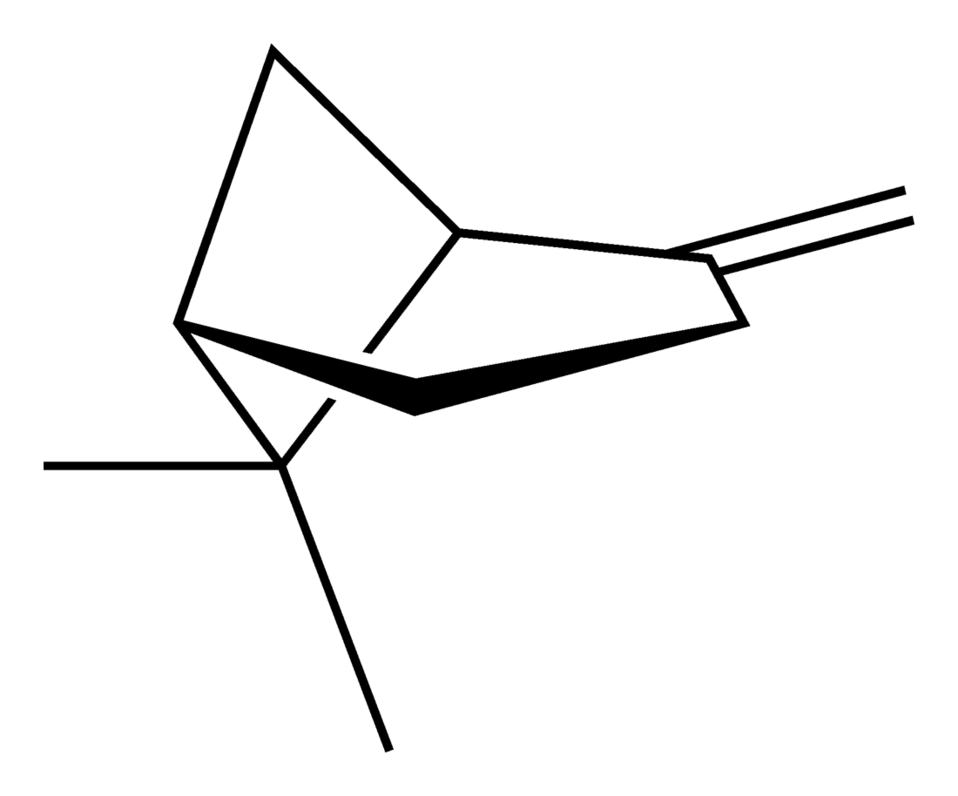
Projected skeletal formula of the (1S)-(−)-β-pinene molecule, C10H16. Based on Image:(1S)-(−)-beta-pinene-from-xtal-3D-sticks.png, with structural data from A. D. Bond and J. E. Davies (November 2001). '(1S)-(−)-β-Pinene'. Acta Cryst. 'E57' (11): o1041-o1042. DOI:10.1107/S1600536801016427. Image generated in Accelrys DS Visualizer.